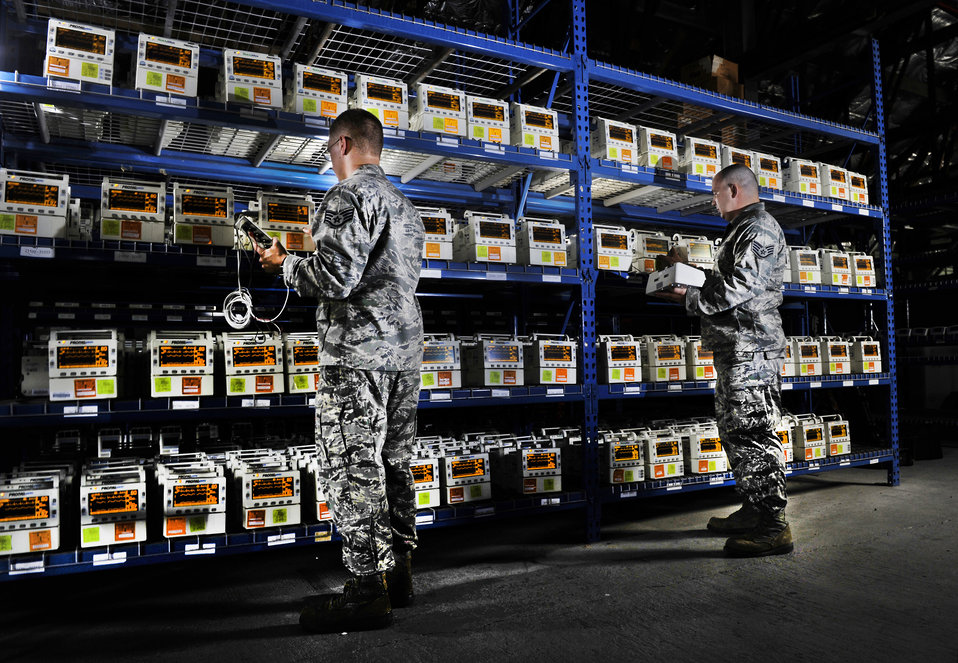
Medical

Staff Sgts. Caleb Gibson, left, and Erick Bartels use patient simulator equipment to check Propaq Encore monitors at Joint Base Andrews, Md., Aug. 15, 2012. The Airmen are biomedical equipment technicians assigned to the Medical Logistics Flight of the 779th Medical Support Squadron.